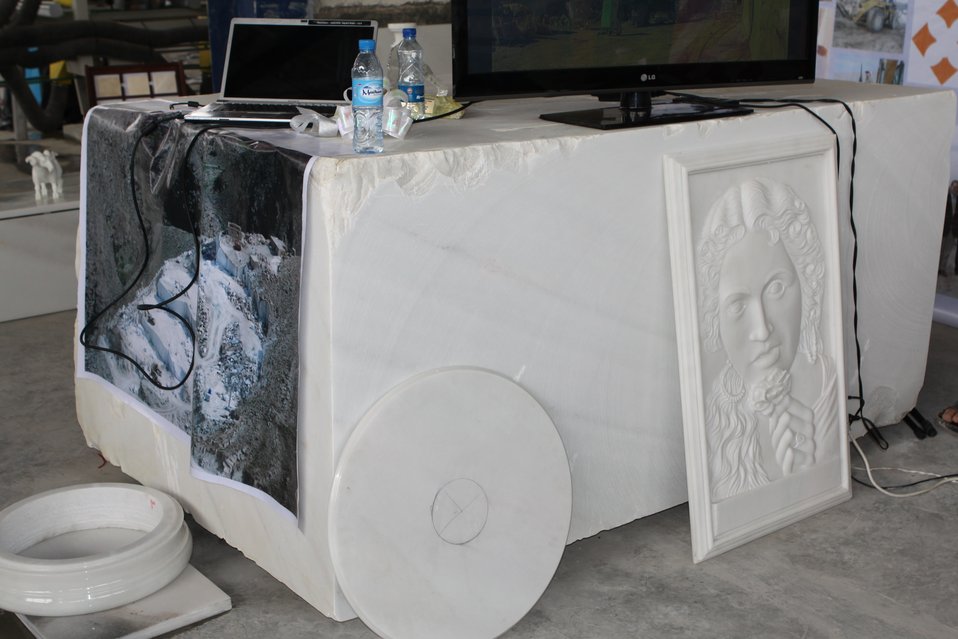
100525 Hirat Marble Conference 134